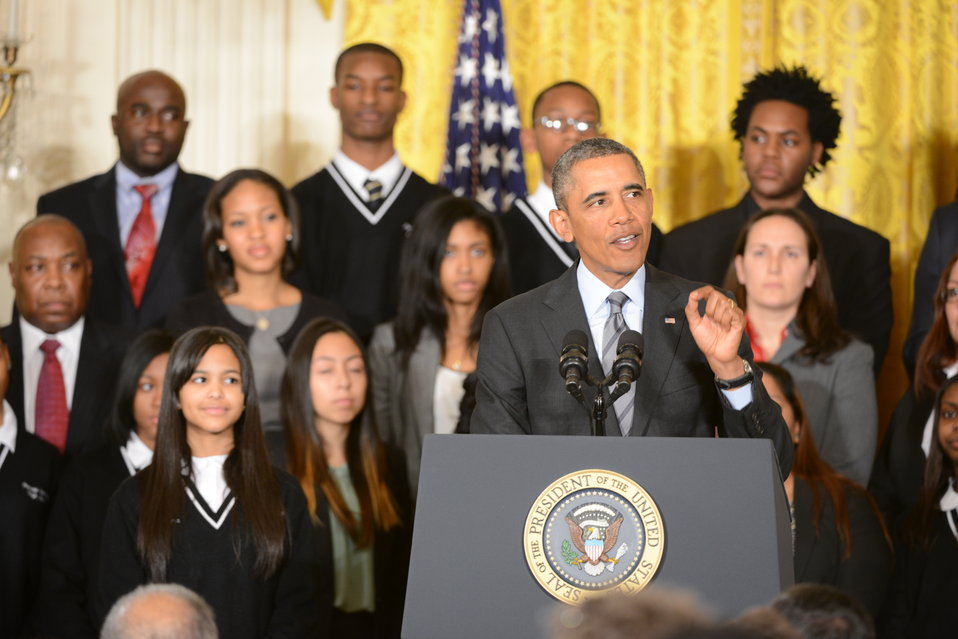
President Barack Obama announces the first five “Promise Zones,” located in San Antonio, TX, Philadelphia, PA, Los Angeles, CA, Southeastern Kentucky, and the Choctaw Nation of Oklahoma.